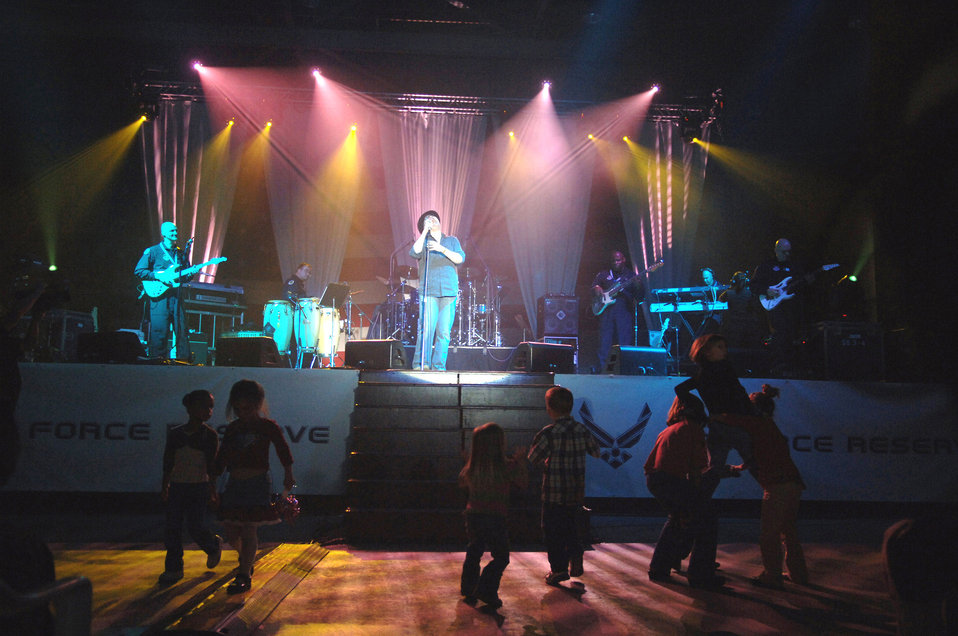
Performers bring holiday cheer to the 'Lik'

John Popper of the platinum-selling group, Blues Traveler, sings while young members of the base community dance Nov. 22 at Incirlik Air Base, Turkey.